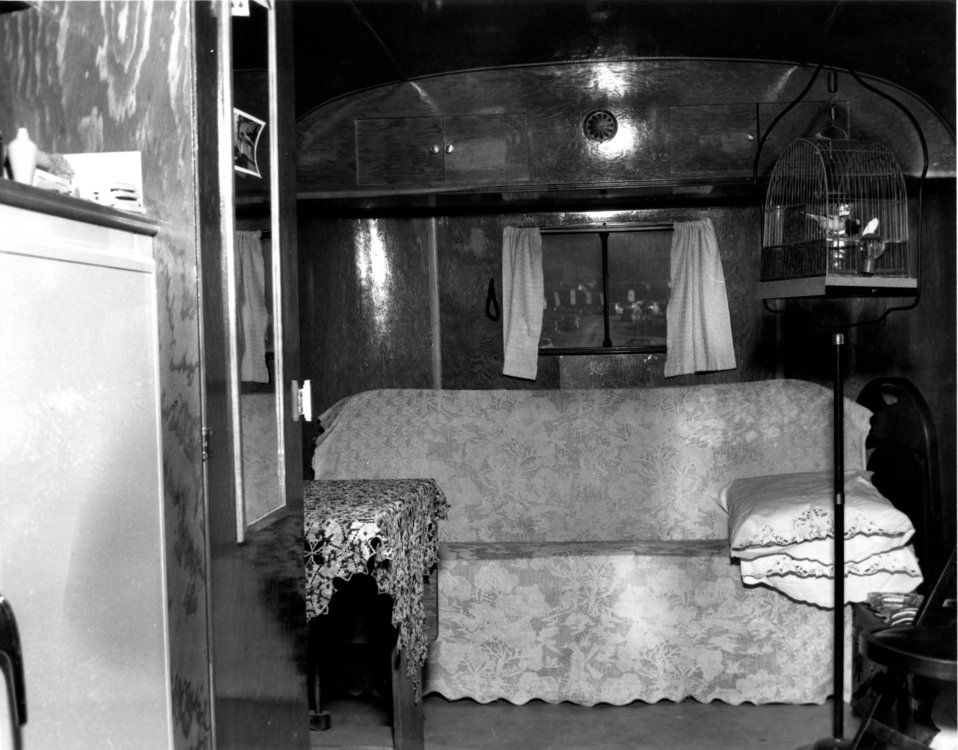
Housing at Oak Ridge